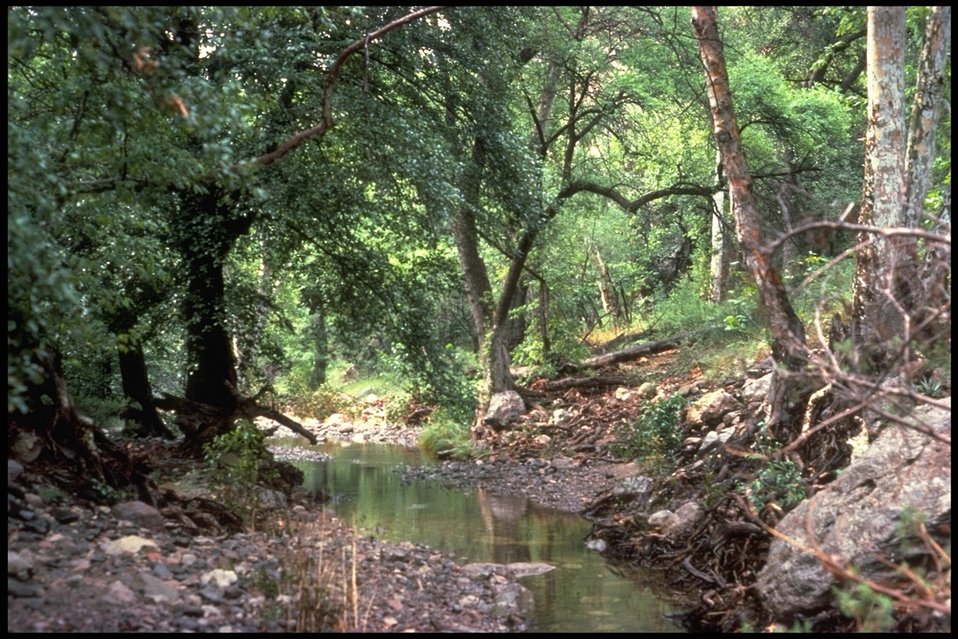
A scenic picture of a little stream running through an Arizona forest.